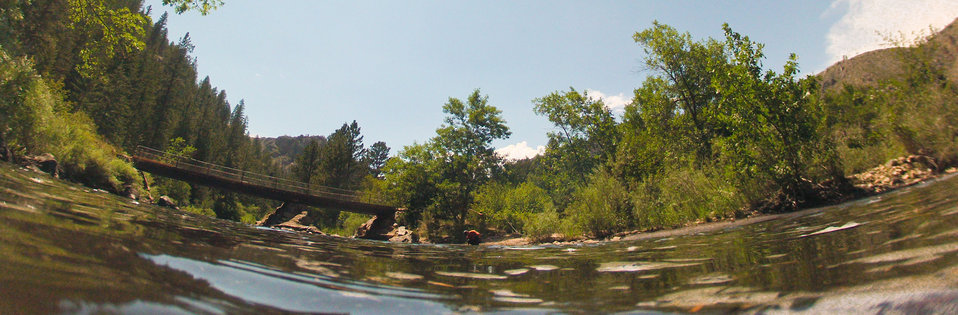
U.S. Department of Agriculture District Conservationist Todd Boldt digs down into the riverbanks and finds ash 18 inches below the surface, at the water’s edge; a result of the Hewlett Gulch Fire (May 14, 2012), in the Poudre Canyon area, near Fort Collins, Colorado on Friday; July 20; 2012. Unmitigated runoff has turned the water in this river from clear to nearly black heavily laden with ash, silt, and burnt debris that recent thunderstorms have washed down from the mountainsides. At its peak more than 400 firefighters were battling fires pushed by 50 mph winds. When the last embers were cooled, more than 12-square miles lay blackened at a cost of approximately 3.2 million dollars to fight. The aerial distribution of straw has successfully kept nearby Seaman Reservoir clean for the drinking water of the City of Greeley. Forest Service lands receive straw; while private and other lands receive a seed mix and straw to promote ground cover plant growth on ash-covered lands. In total; 1; 800 tons of straw will be applied during the 14-day operation. One quarter of the cost was paid by the City of Greeley and the U.S. Department of Agriculture funded the remainder.